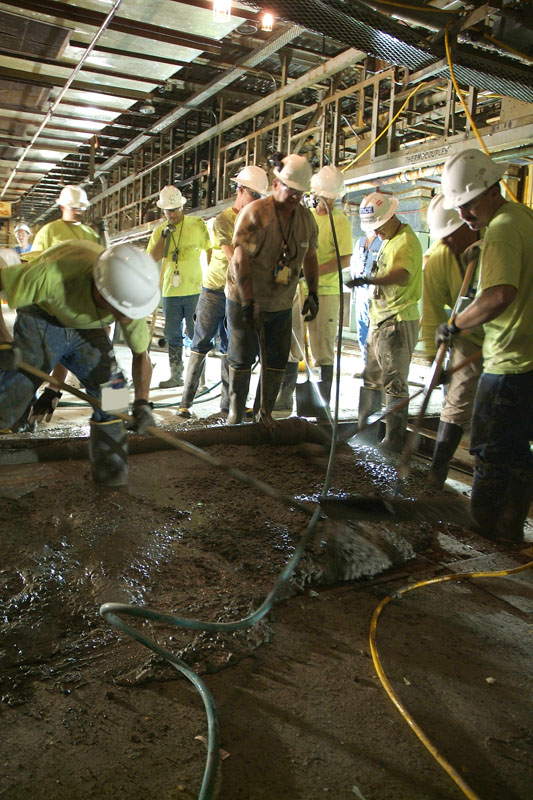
Recovery act workers for Lata-Kentucky spread flowable fill in a pit in the Feed Plant at DOE's Paducah site.